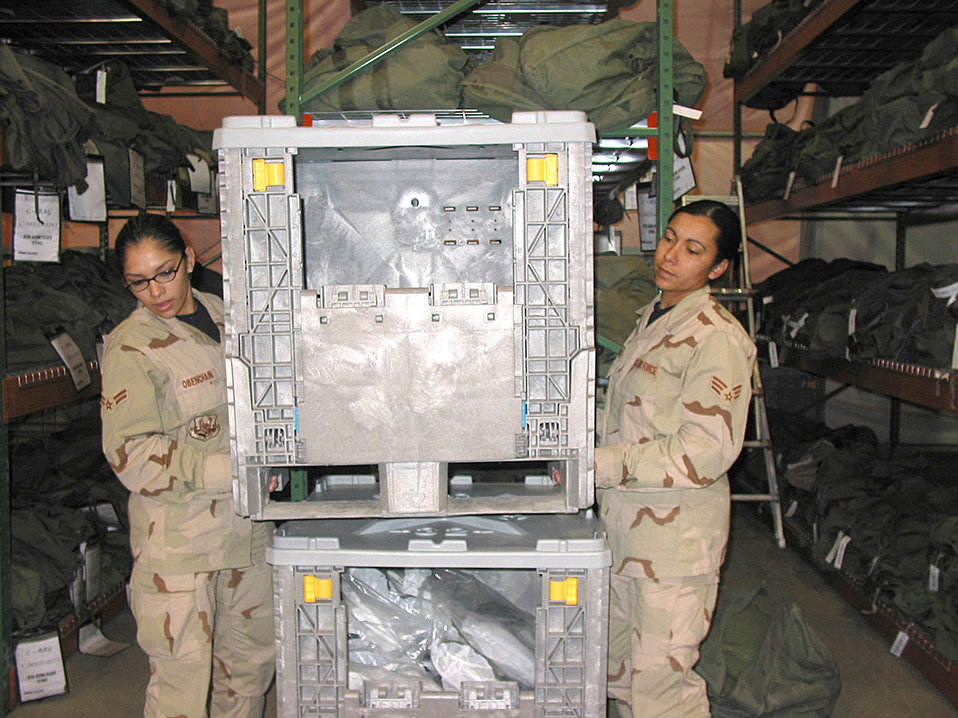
Operation Enduring Freedom

MANAS AIR BASE, Kyrgyzstan - (From left) Airman 1st Class Pamela Obenchain and Senior Airman LaTonya Jackson, 376th ELRS, set up a crate so more equipment can be sorted. The Airmen are assigned to the 376th Expesitionary Logistics Readiness Squadron.